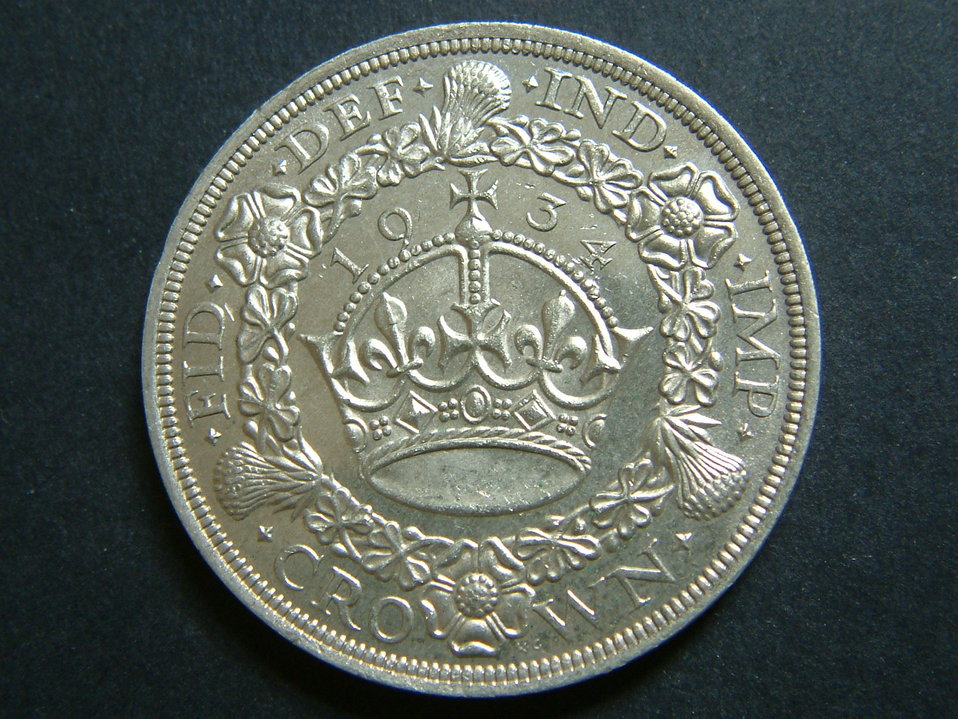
Photo of George V 'Wreath' Crown taken from my personal collection.